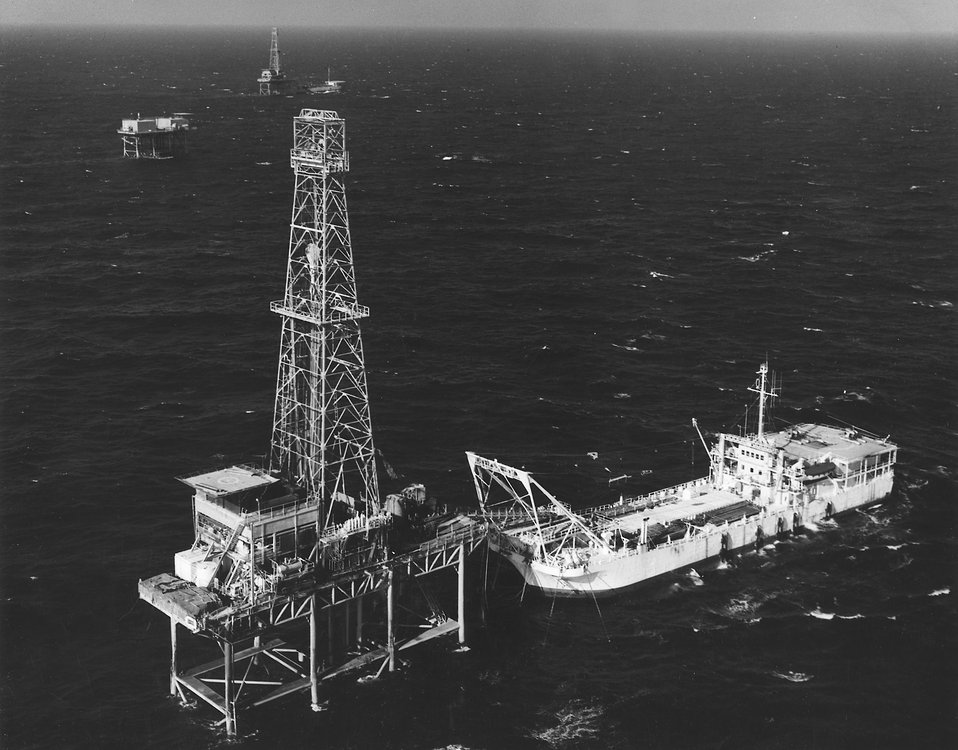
Tender-Patform Rig. Offshore, Louisiana. c. undated